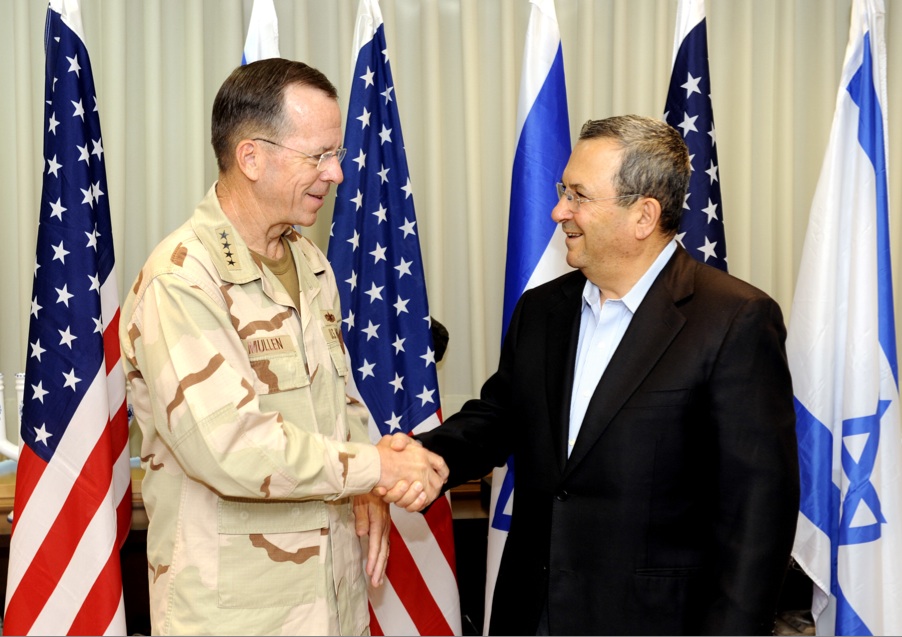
Admiral Mullen Shakes Hands With Israeli Defense Minister Barak

Chairman of the Joint Chiefs of Staff Admiral Michael G. Mullen shakes hands with Israeli Defense Minister Ehud Barak before their meeting at the U.S. Embassy Tel Aviv in Israel on June 27, 2010.